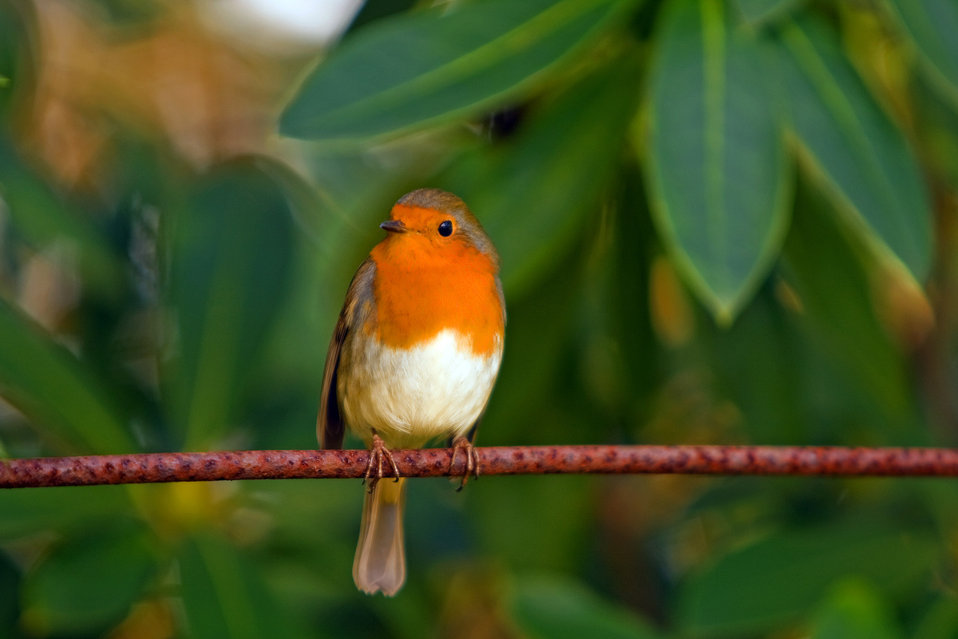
Robin bird

Robin redbreast bird perched on a branch beautiful photo portrait.